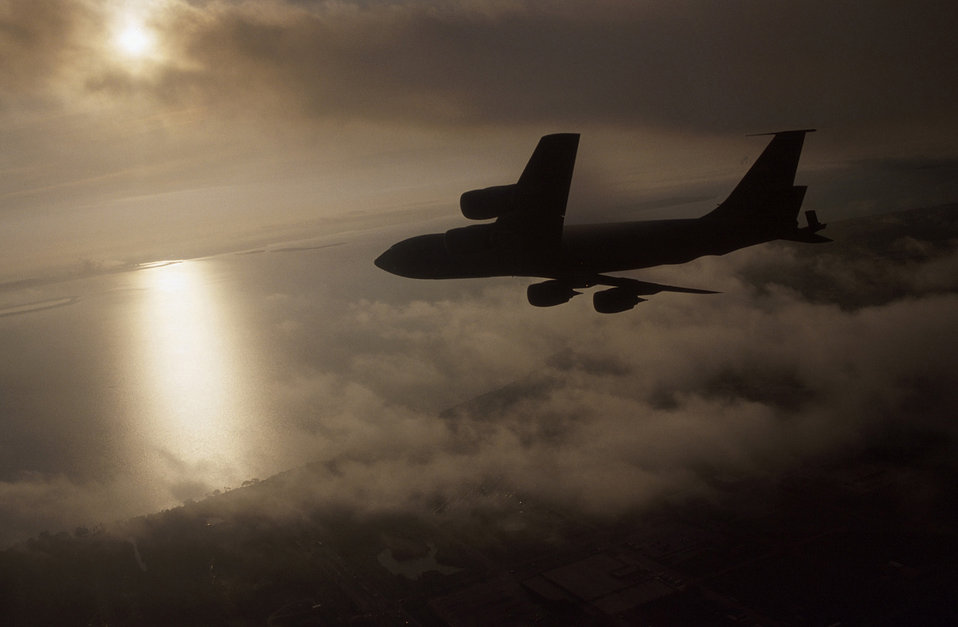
Light ahead

FILE PHOTO -- A KC-135R Stratotanker flies a training mission. The KC-135's principal mission is air refueling. This asset greatly enhances the U. S. Air Force's capability to accomplish its mission of Global Engagement. It also provides aerial refueling support to U.S. Navy, U.S. Marine Corps and allied aircraft.